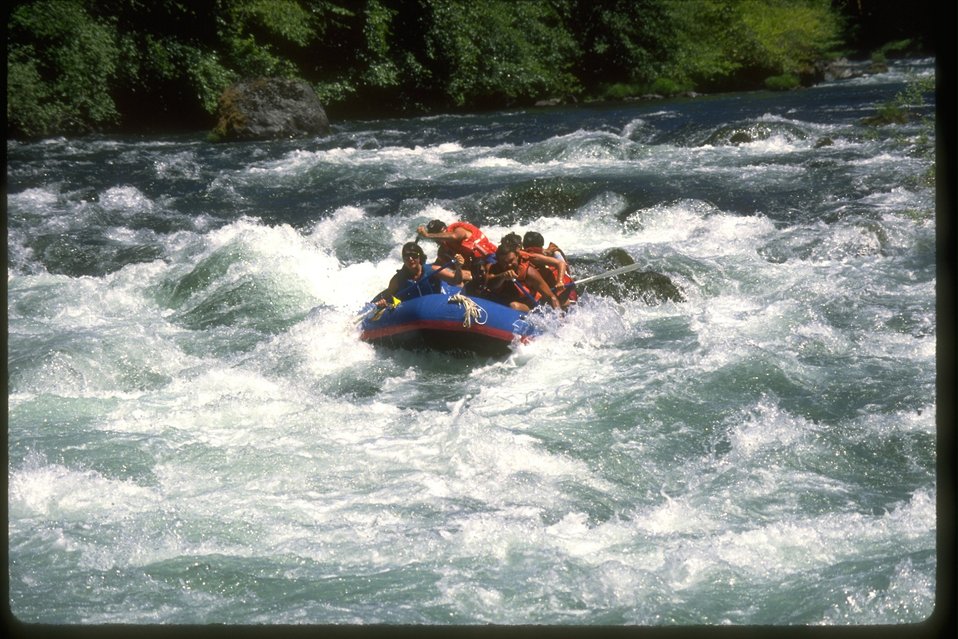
Rafting on the North Umpqua River.